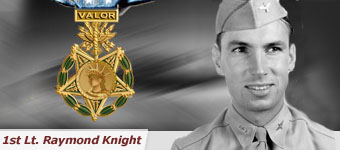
First Lt. Raymond L. Knight was awarded the Medal of Honor posthumously Sept. 24, 1945, for his heroic exploits during bombing raids over German airfields April 1945. His Medal of Honor was the last one given to a U.S. Army Air Forces Airman in World War II.